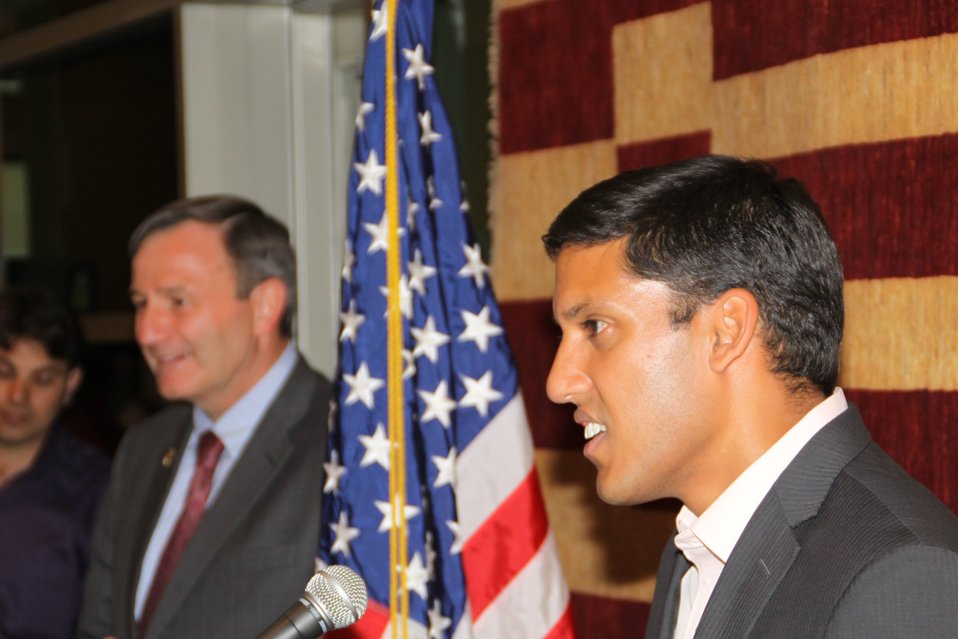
US Embassy Town Hall July 21, 2010